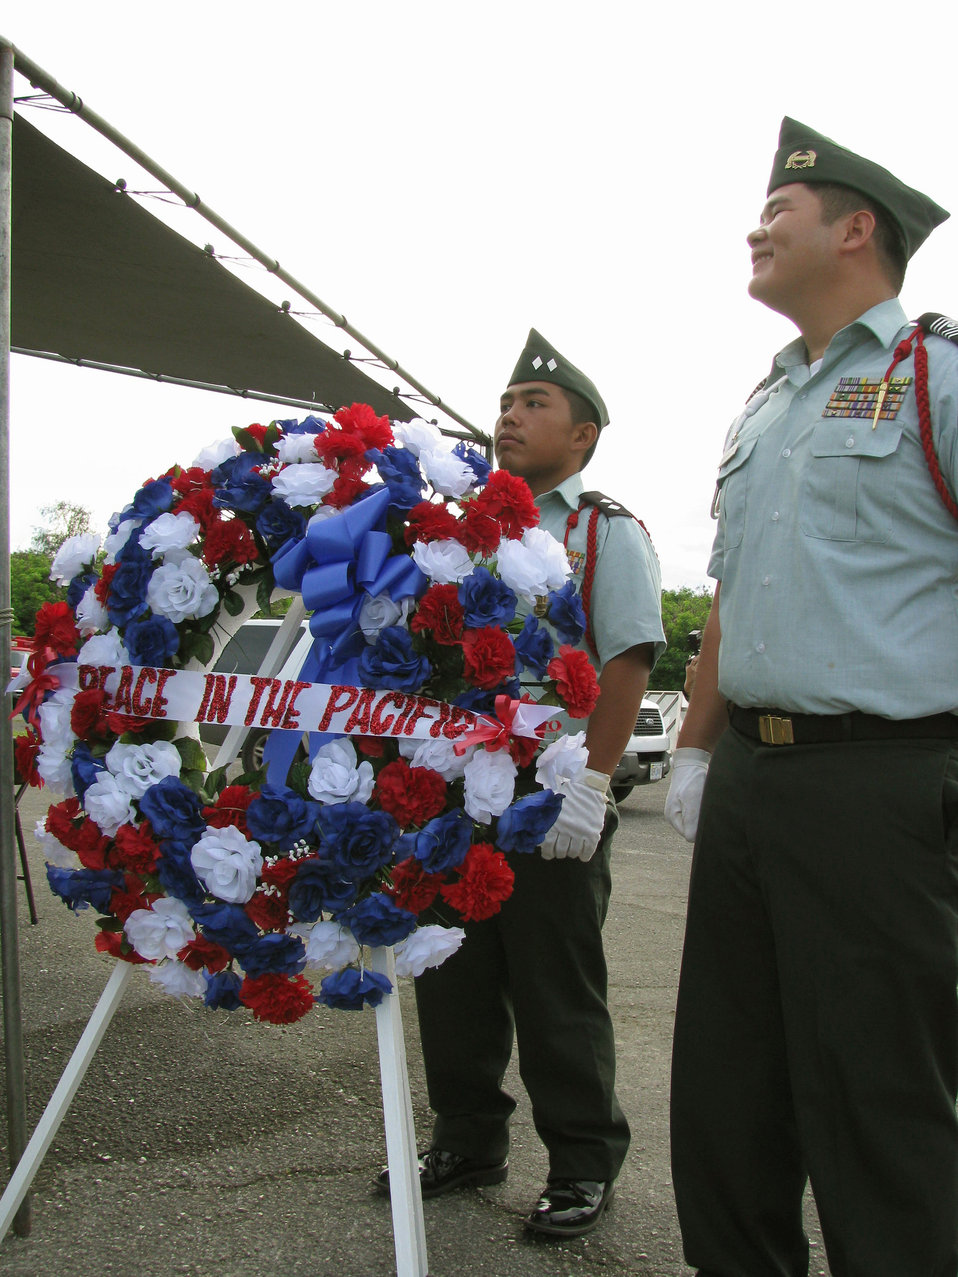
VCSAF describes airpower's key role in Pacific at Tinian symposium

Joel Santos (left) and William Manglona stand by a wreath commemorating the end of World War II shortly before a ceremony Aug. 6, 2010, in Tinian, Commonwealth of Northern Northern Mariana Islands. The two Junior R.O.T.C. cadets from Tinian High School placed the wreath by pits designed to load atomic bombs onto B-29 Superfortresses at the end of World War II, as part of a commemoration of Tinian's role in the war.